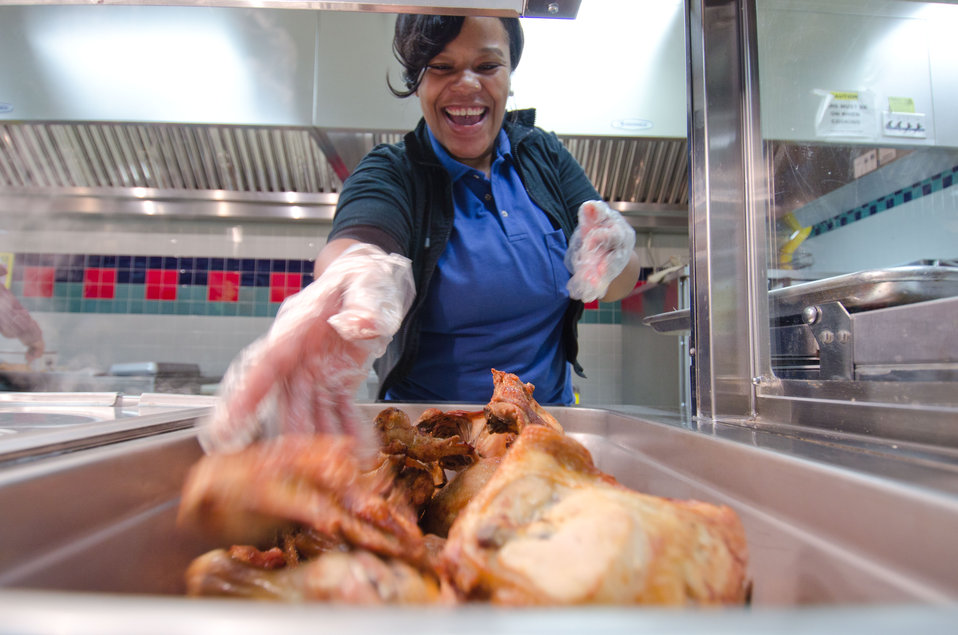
Cafeteria Assistant Danielle Robinson puts roasted chickens into heated service line trays for the school lunch program at Nottingham Elementary School in Arlington, VA, on Wednesday, October 12, 2011. Today's menu included roasted chicken, roasted butternut squash with dried cranberries, farm fresh mixed lettuce salad, turkey wraps, pita wedges, hot muffins, carrots, Asian pears and more.